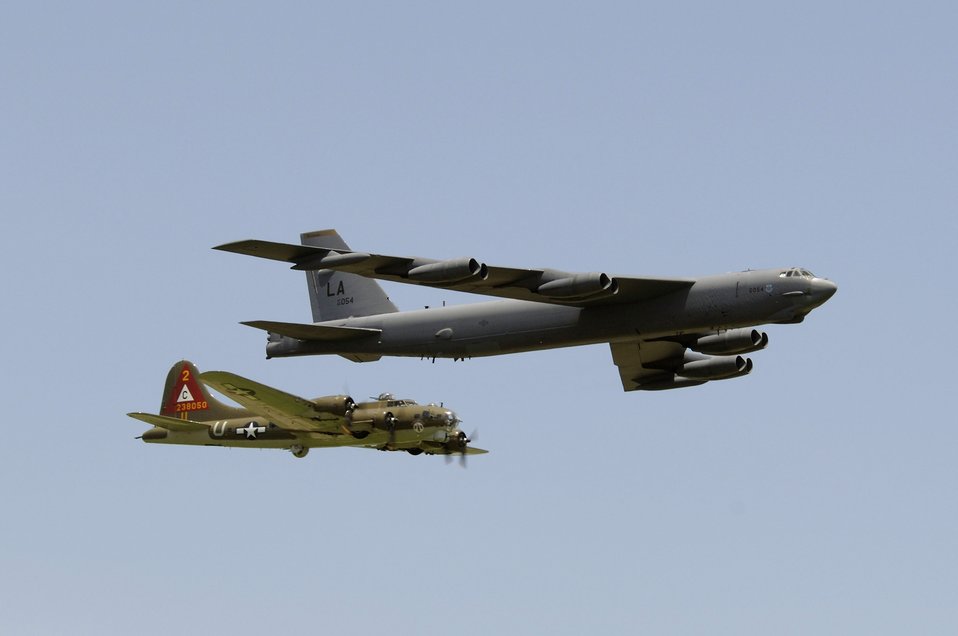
Heritage flight

A B-17G Flying Fortress and a B-52H Stratofortress fly in a heritage flight formation May 13 during the 2006 Defenders of Liberty Airshow at Barksdale Air Force Base, La. These two aircraft represent 70 years of